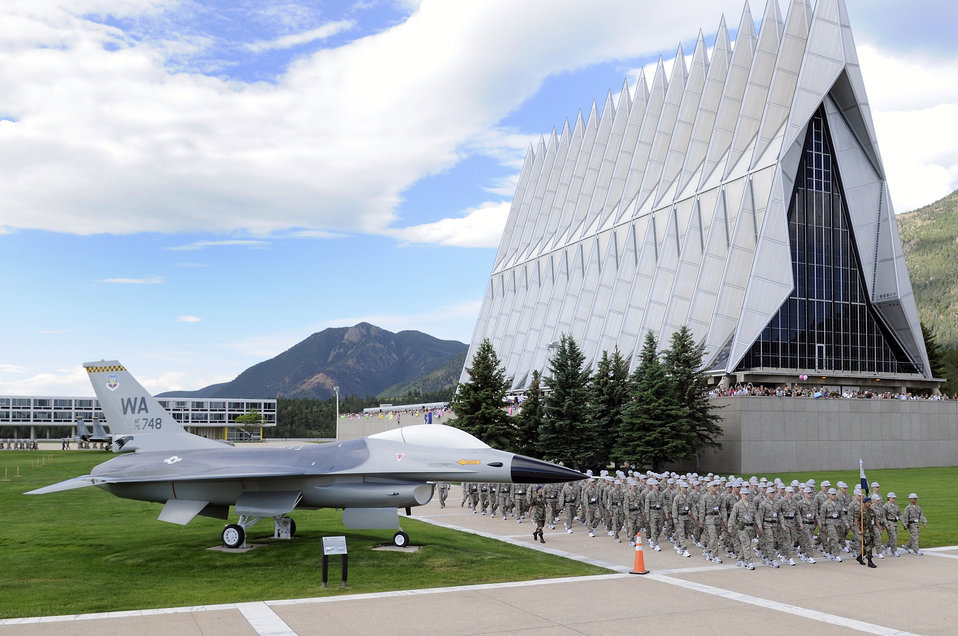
Welcome to the Academy

The 1,376 members of the Class of 2013 are dismissed after reciting the Oath of Allegiance in front of the cadet chapel, family and friends during their first formation June 26 at the U.S. Air Force Academy in Colorado Springs, Colo.